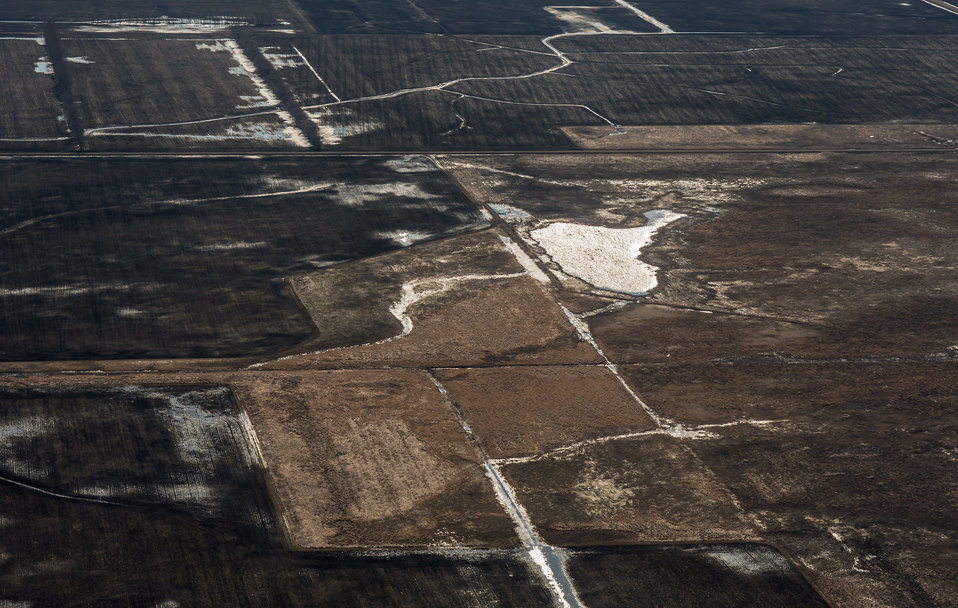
Vertin, U.S. Department of Agriculture (USDA) Natural Resources Conservation Service (NRCS) Wetland Reserve Program (WRP) in Wilkin County, MN, on Tuesday, April 30, 2013. For information about this and other programs from the USDA Red River Basin Initiative (RRBI) please see www.mn.nrcs.usda.gov/news/features13/RRBI.html.